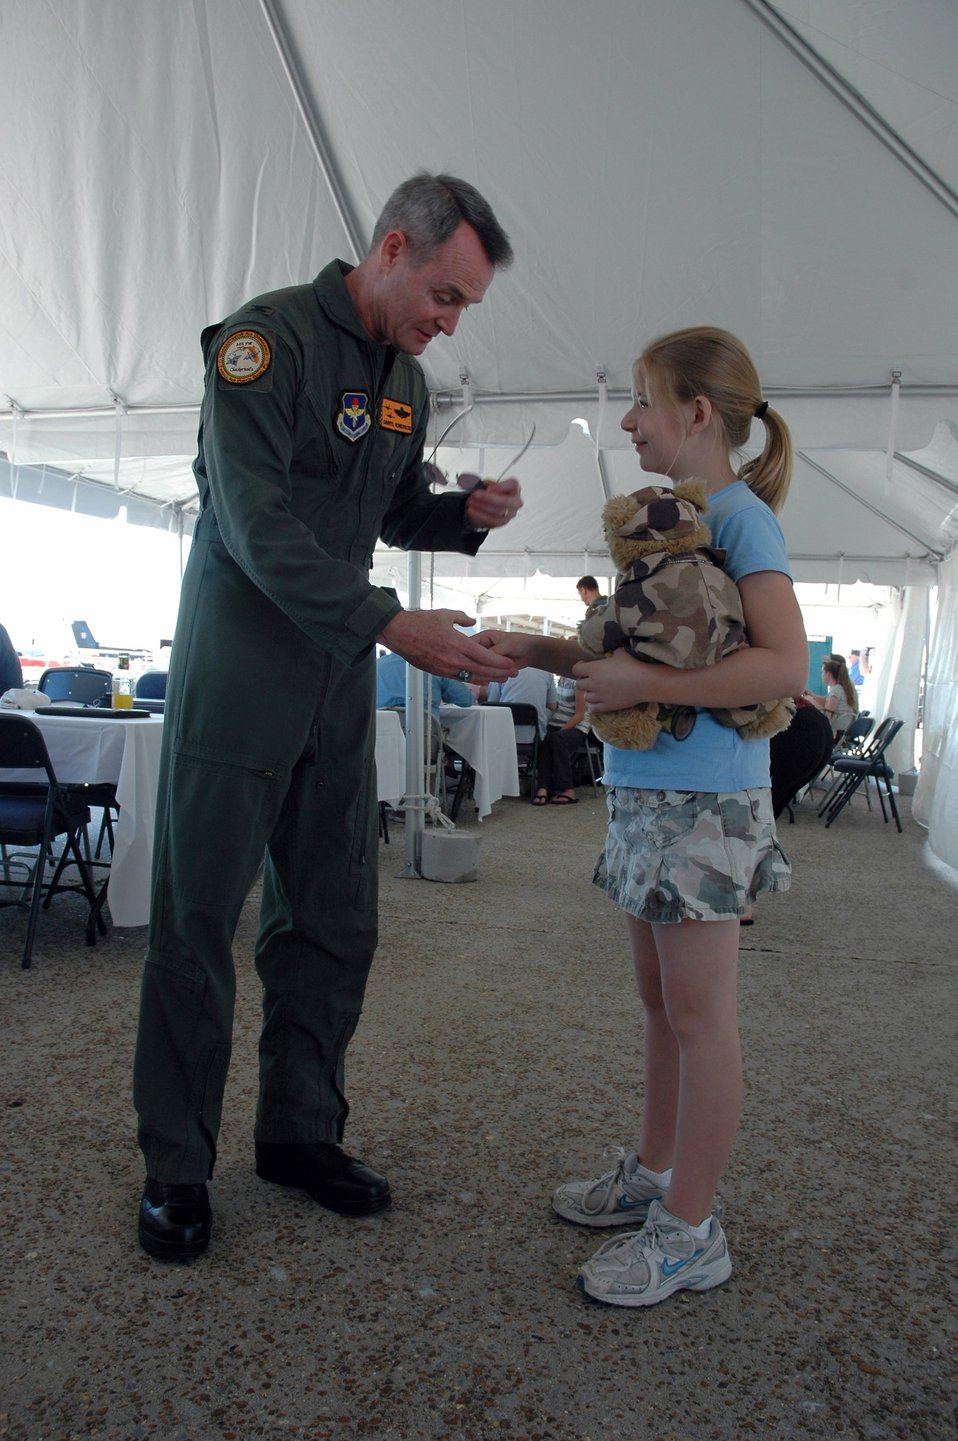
Never too young to be a hero

Bailey Reese, founder and president of Hero Hugs, meets Col. Darryl Roberson, 325th Fighter Wing commander, during the recent open house at Tyndall Air Force Base, Fla. Bailey, with the help of her family, started Hero Hugs four years ago to recognize and show appreciation for America's servicemembers.